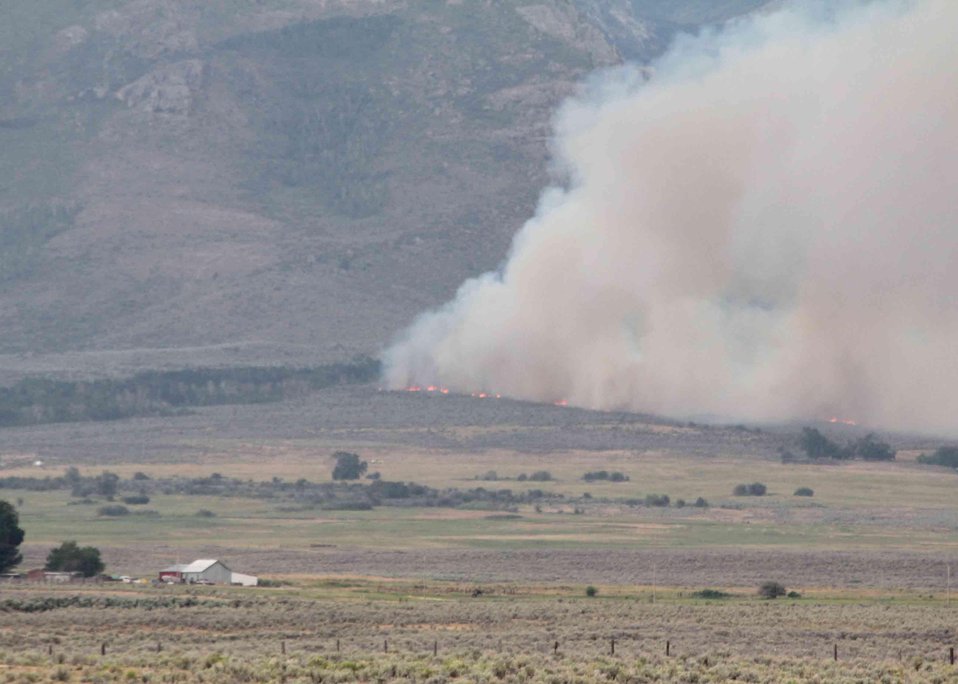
The Smith Ranch Fire located 10 miles northwest of Jiggs, NV began on Jul. 19, 2013 by lightning and has consumed approximately 2,759 acres. The Smith Ranch Fire is 100% contained.